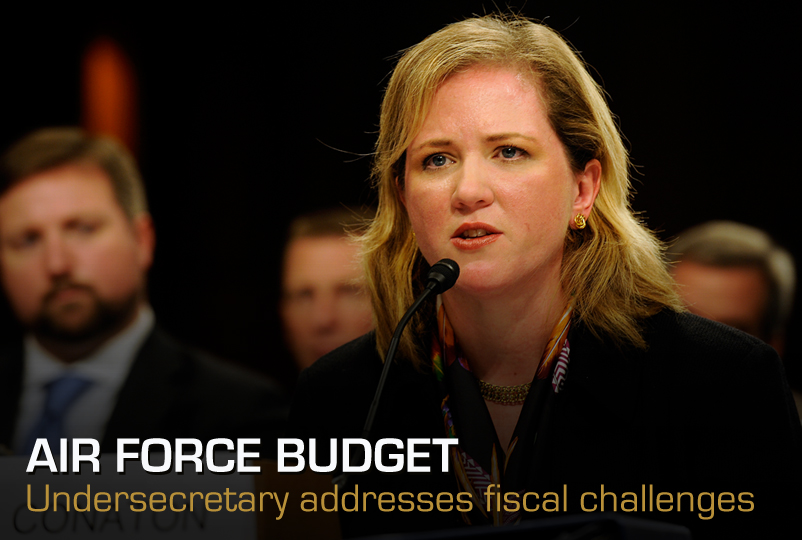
Air Force Budget